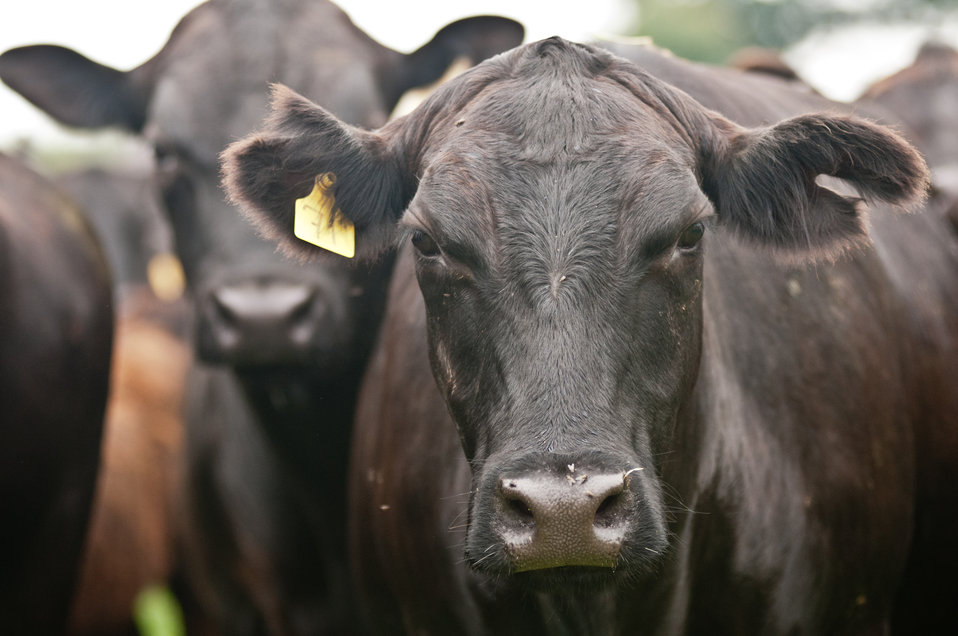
Black Angus cows and calves graze organic pastures, and for added nutrition and variety, they enjoy a daily feeding of sweet silage at Nick’s Organic Farm, owned by Nick Maravell, in Adamstown, MD on Friday, July 12, 2013. The white plastic wrapped bales of pasture grass and alfalfa have been fermenting for months to create sweet silage that stores well and can be used to feed cattle at varying amount all year long. The fermentation process sweetens the taste and increases the vitamin levels in it. The farm produces Black Angus beef, chicken, turkey, eggs, hay, soybeans, corn, alfalfa, orchard grass, rye; and other crops. The cattle are100% grass-fed receiving certified organic pasture, certified organic hay (in winter), water and mineral salts mixed with sea kelp. The cattle are not fed hormones, antibiotics or animal products. Poultry feed from grain is ground from organic grain. The poultry also graze on organic pastures. The farm has conducted on-farm research with federal, state and non-profit agencies to refine organic practices. An organization such as the U.S. Department of Agriculture (USDA) Agricultural Research Service (ARS) center in Beltsville has been able to conduct research to improve organic crops and to breed and manage the cattle so that they have.